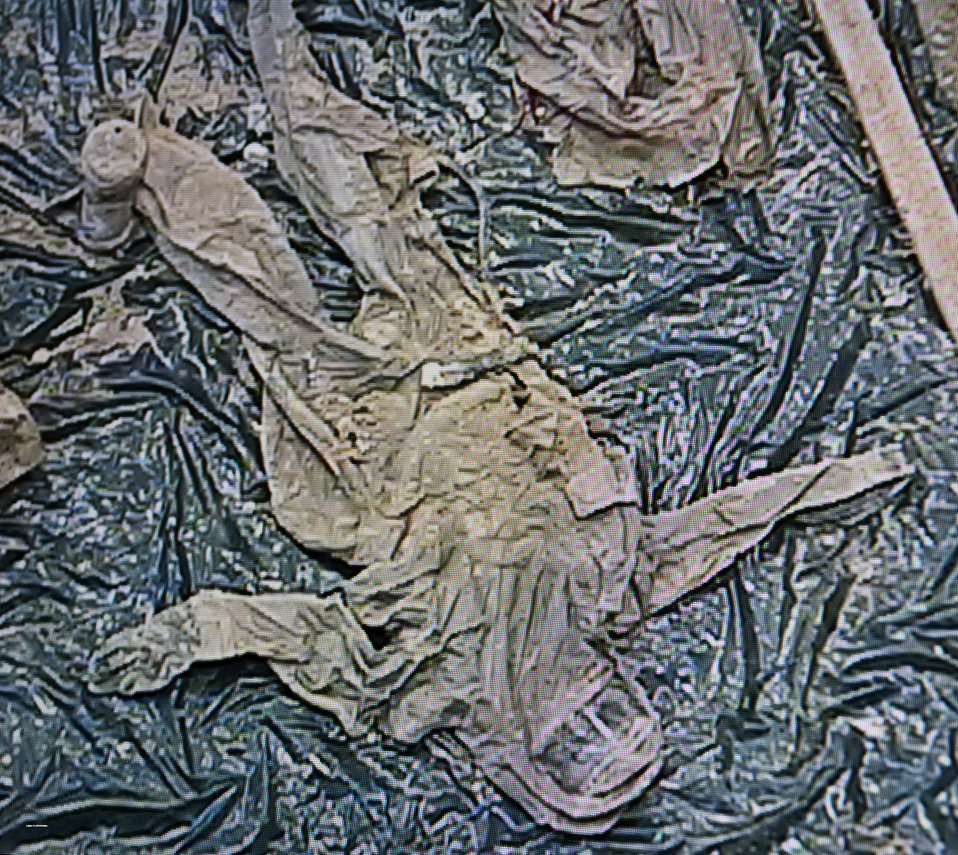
Los Alamos Dig Unveils Items Ranging from Military Trucks to Toothbrush

Workers unearthed a radiation protection suit at MDA-B.

In a $110 million Recovery Act project at Los Alamos National Laboratory, workers are excavating a waste disposal site known as Material Disposal Area B (MDA-B). Completion of the MDA-B cleanup will reduce EM’s legacy footprint by more than 260,000 square feet.